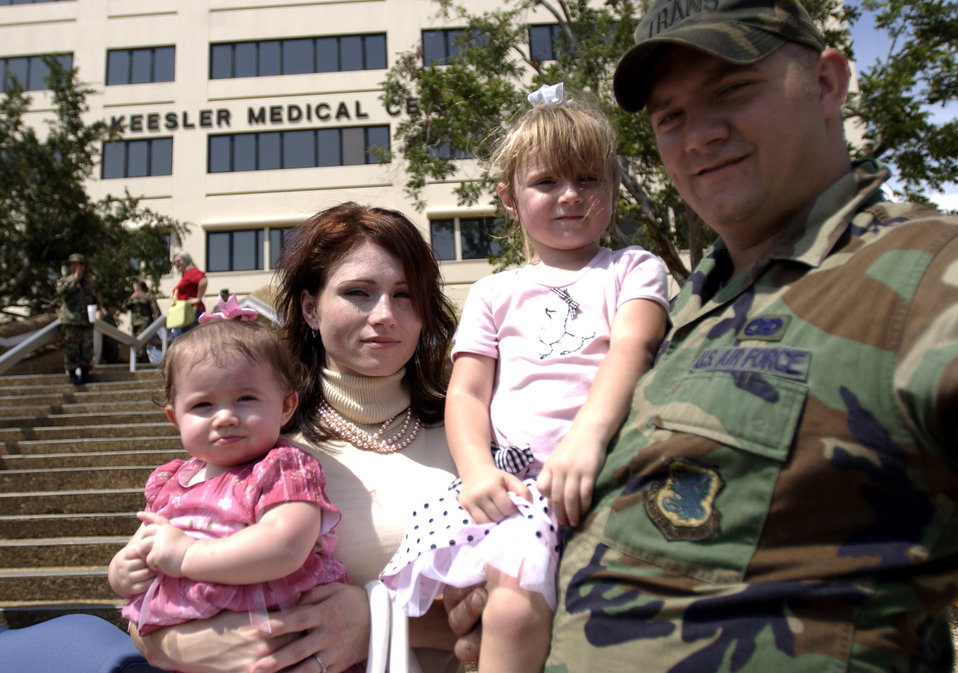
Keesler hospital takes big step forward

Sage Madison Post was born at the Keesler Air Force Base, Miss., medical center Aug. 29, 2005, under the illumination of flashlights because of Hurricane Katrina. Celebrating her first birthday at the medical center's official re-opening ceremony are her mother, Stephanie; sister, Austin; and father, Senior Airman Aaron Post.